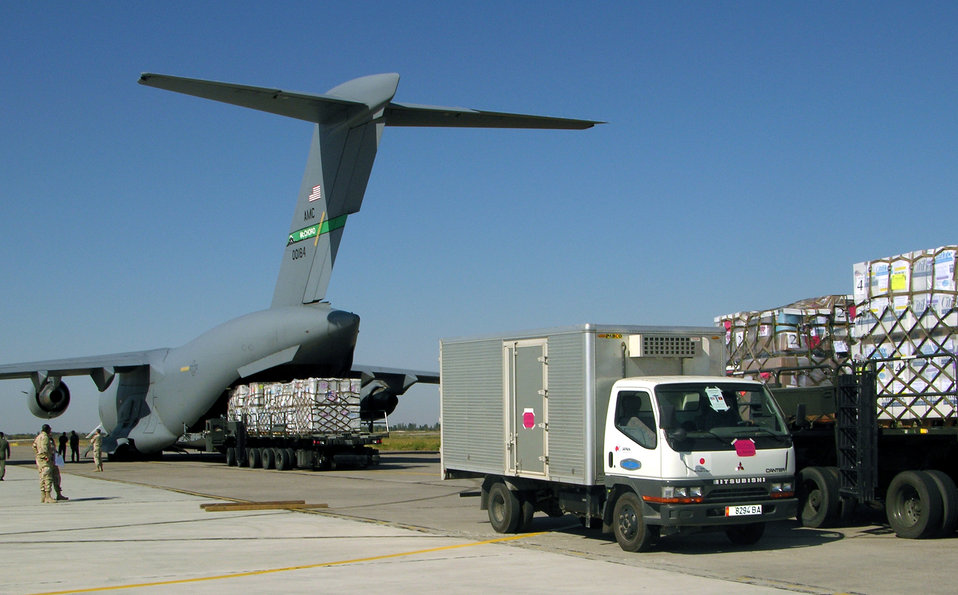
Humanitarian airlift brings $15 million in aid to base

MANAS AIR BASE, Kyrgyz Republic -- Trucks line up as Operation Provide Hope aid is unloaded from a C-17 Globemaster III from McChord Air Force Base, Wash., on Sept. 23. More than $15 million worth of medicines and medical supplies were flown in.